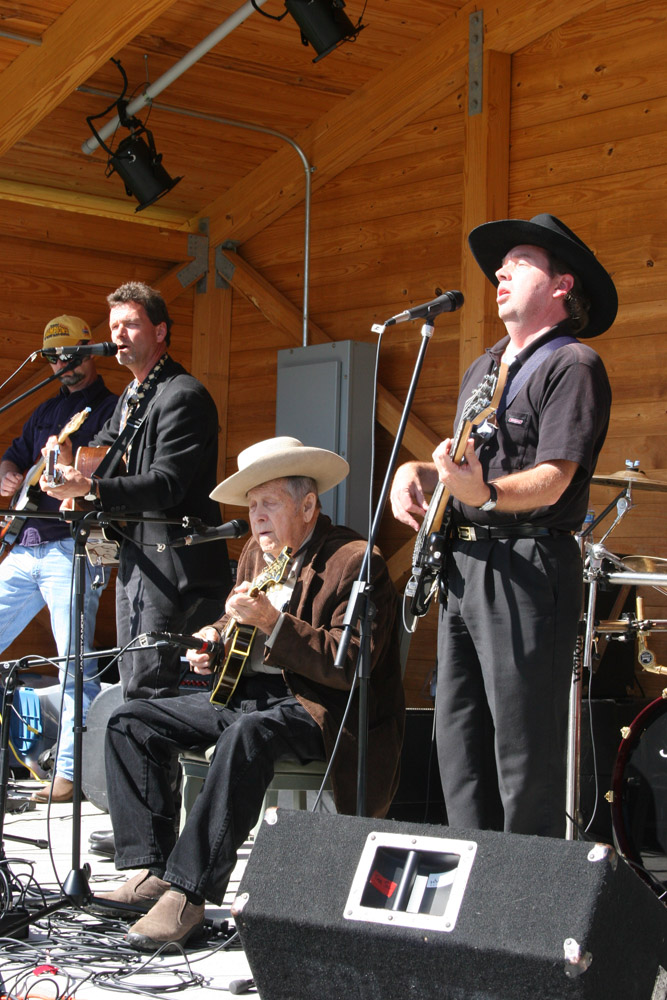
Freshwater Folk Festival

The 5th Annual Freshwater Folk Festival at White Sulphur Springs National Fish Hatchery in West Virginia.Credit: USFWS